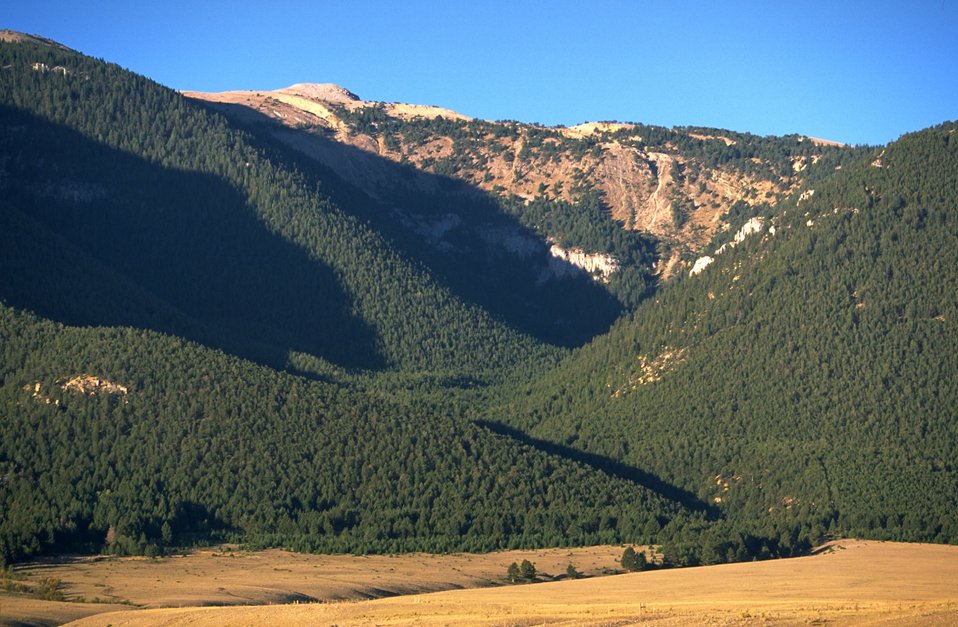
Forested Mountain